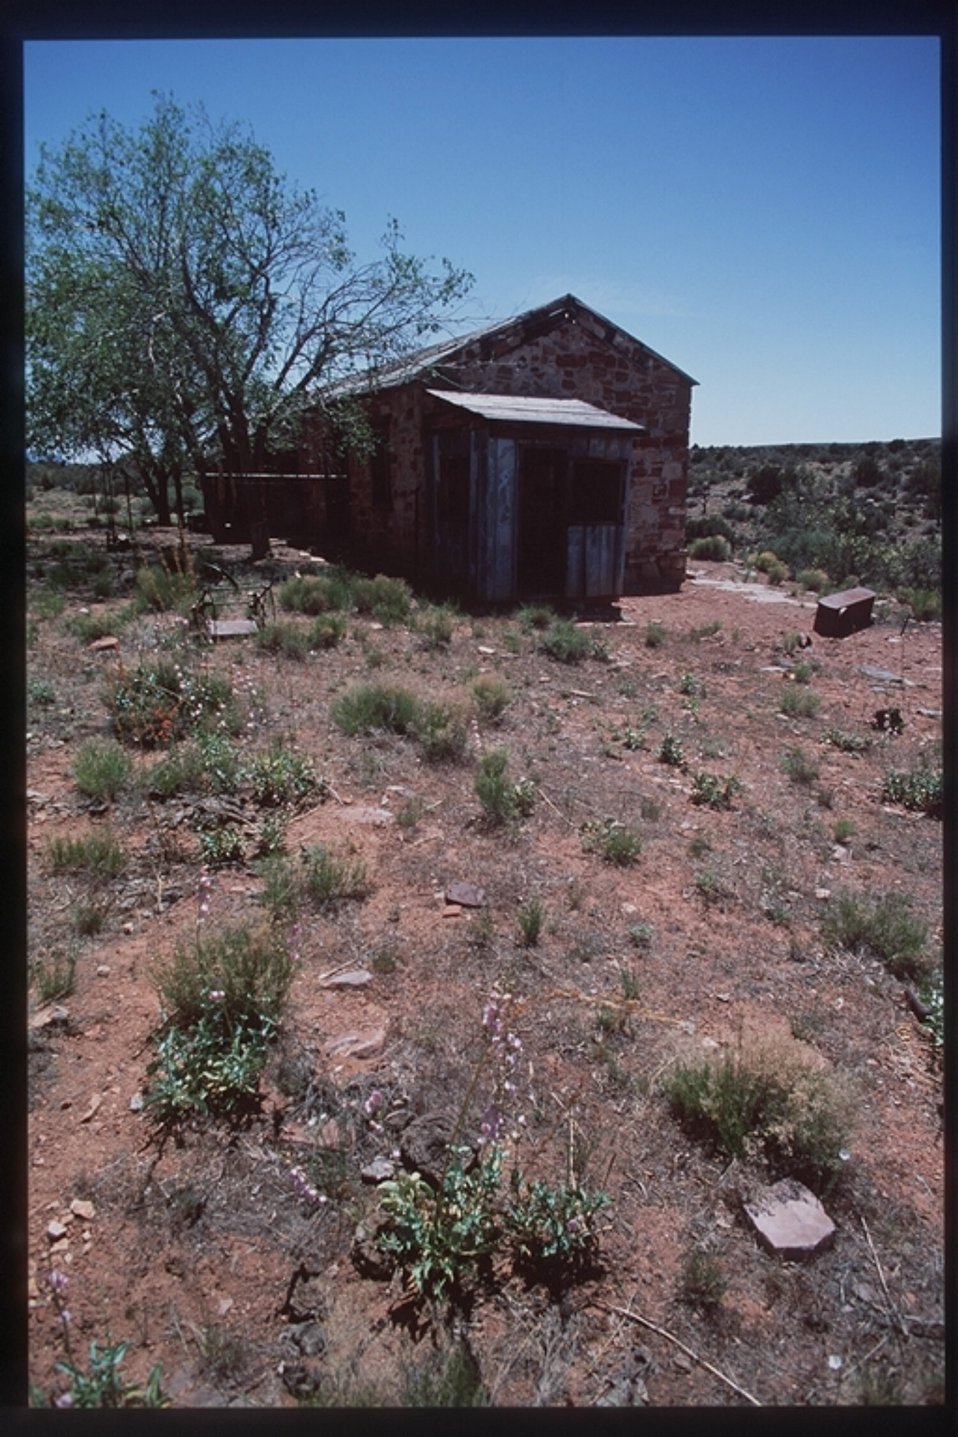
An abandoned structure in the Grand Canyon National Monument.